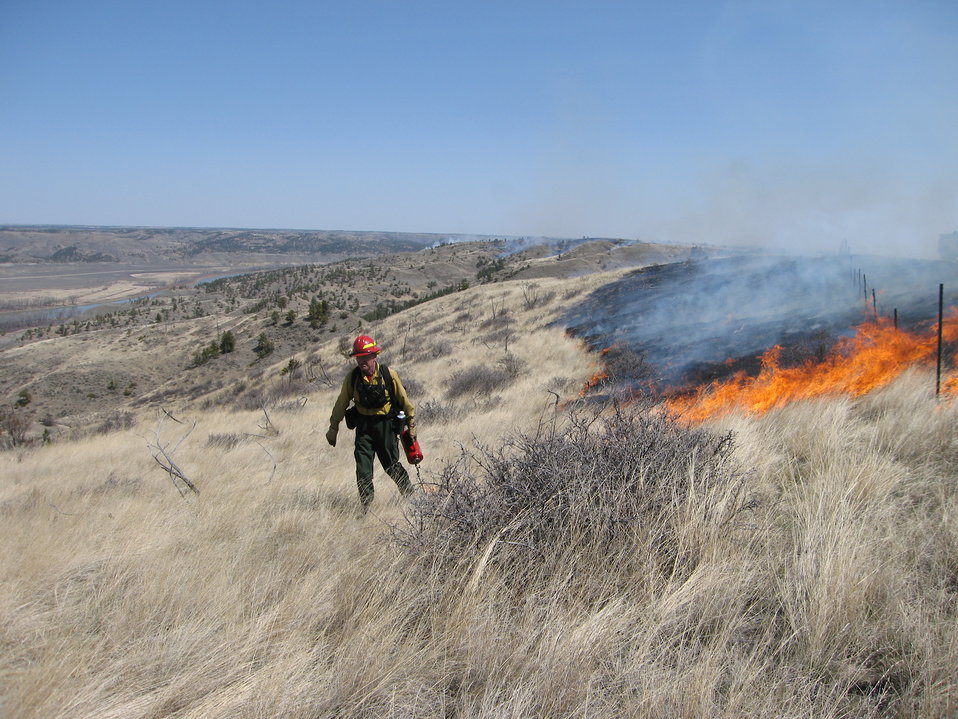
CMR Fire Program

The CMR fire staff usually begins prescribed burning in the spring. As temperatures rise and vegetation dries out through the summer, wildfire season begins.